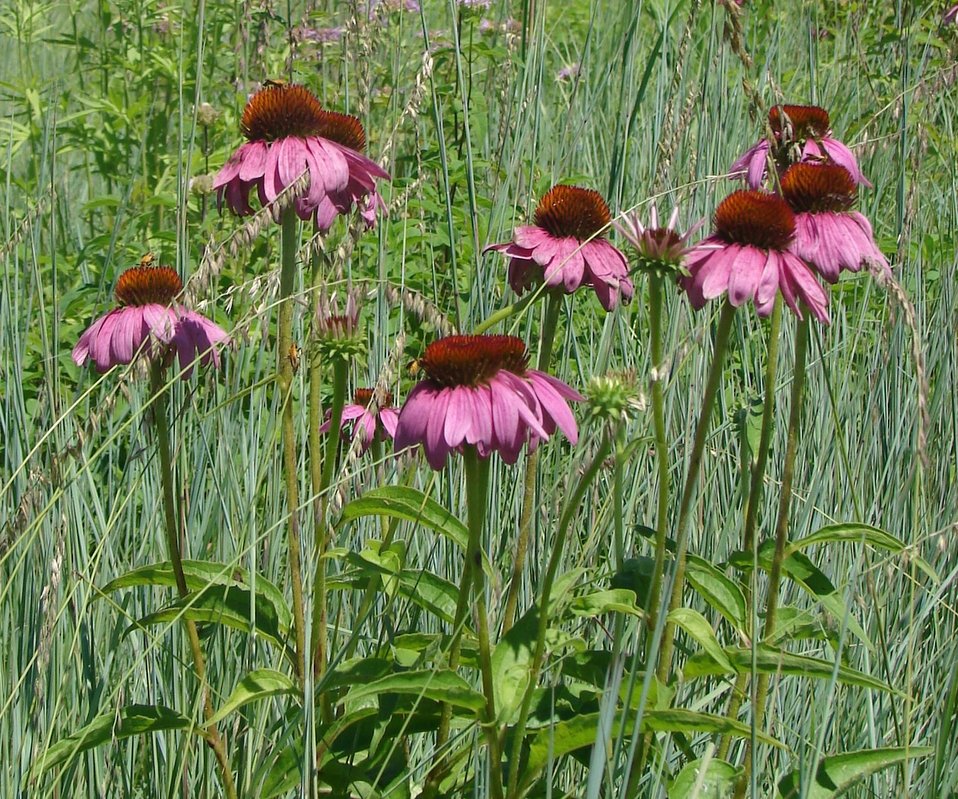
Purple Coneflowers

Purple Coneflower, also known as echinacea, is a native wildlflower commonly seen in the Tallgrass Prairie landscape.

Credit: Jennifer Briggs / USFWS

Photo Contest Entry #113